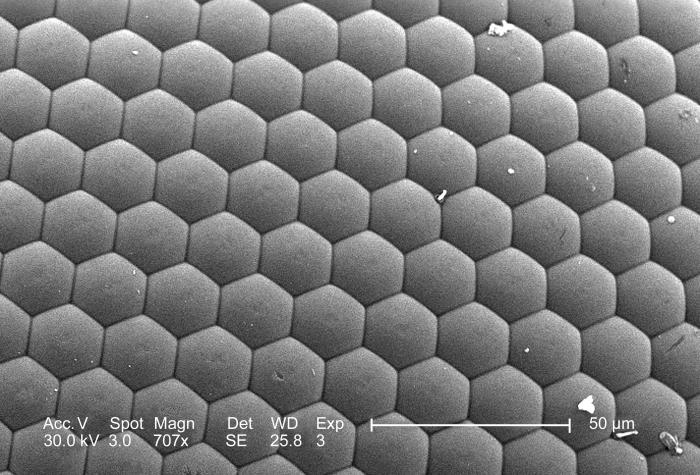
Under this moderate magnification of 707x, this scanning electron micrograph (SEM) depicted the surface of an unidentified insect's compound eye. Discovered diceased on the grounds of the Decatur, Georgia suburbs, the eye is seen to be composed of repeating hexagonally-shaped units known as 'ommatidia', hence the term 'compound'. The white specs on the surface of the eye are merely debris particles of unknown origin. In order to fully appreciate the structural hierarchy of the compound eye, see PHIL 7875, 7877, this image (7878), 7879, 7880, and 7881, for successively greater magnifications of this visual structure.